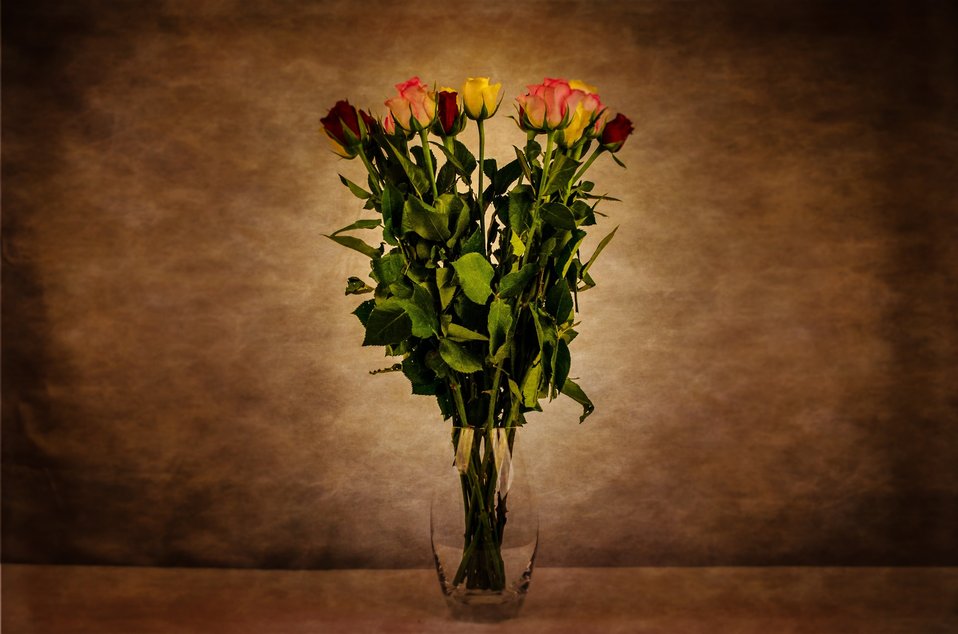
Flowers in the vase on the dark background.